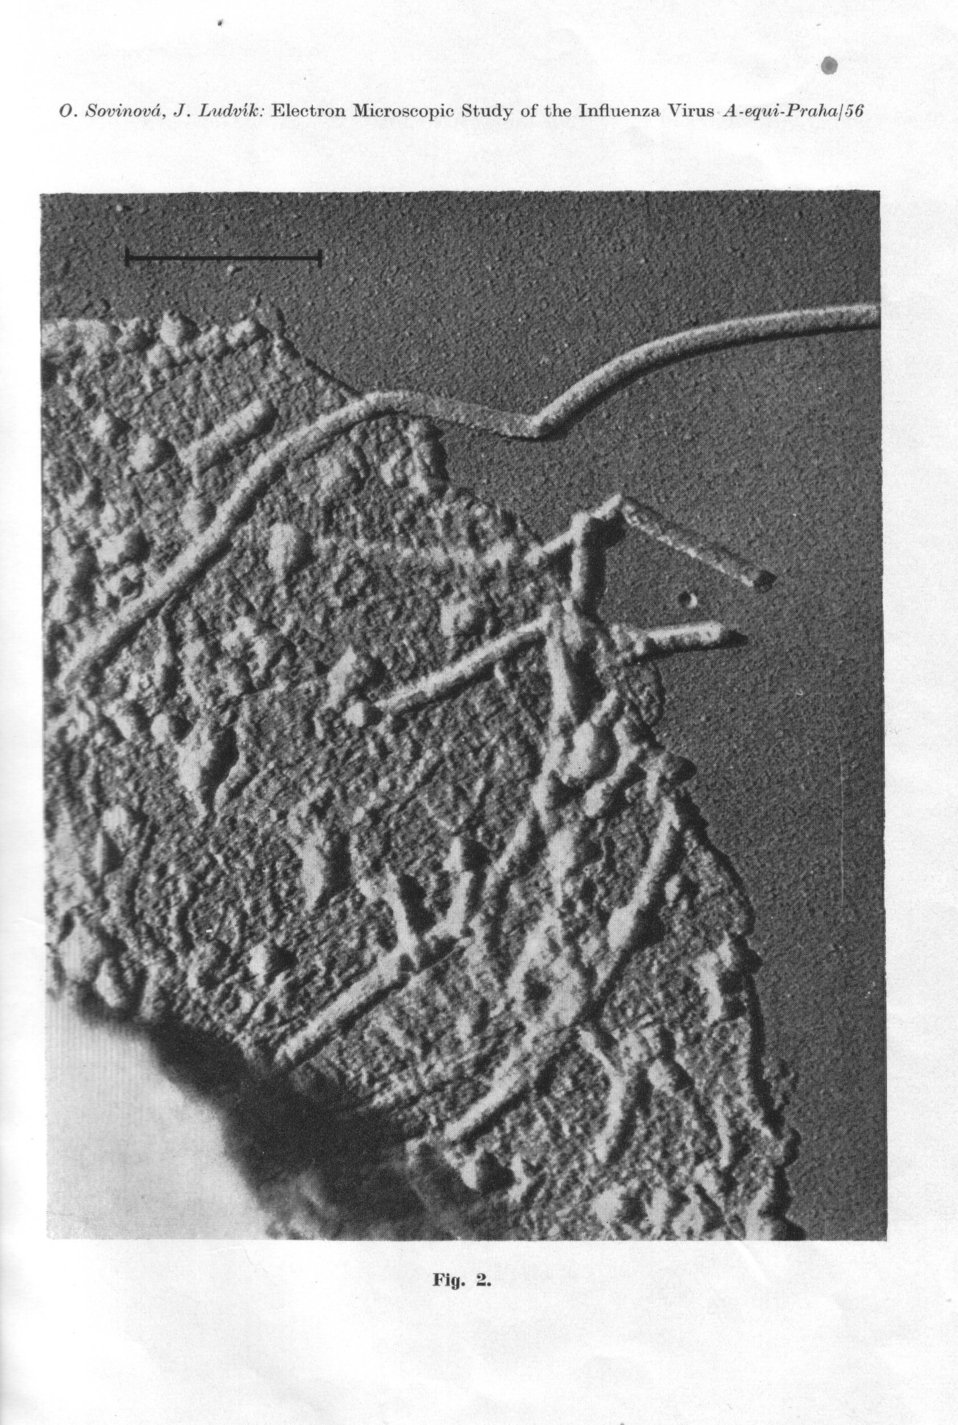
Čeština: Acta Virologica